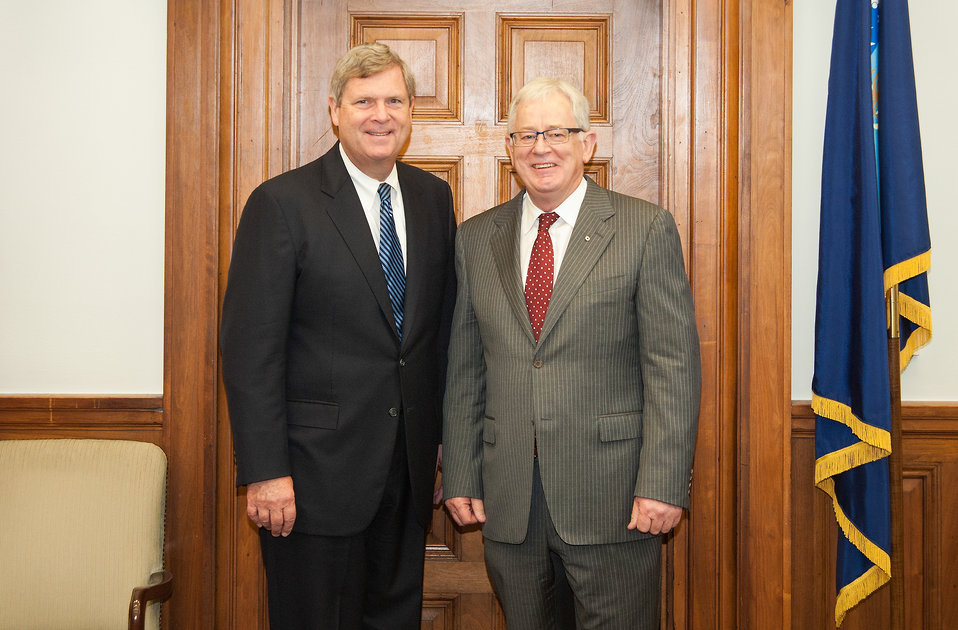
Agriculture Secretary Tom Vilsack (l) met with Andrew Robb, Australian Minister for Trade and Investment at the U.S. Department of Agriculture in Washington, DC on Thursday, Oct. 31, 2013.